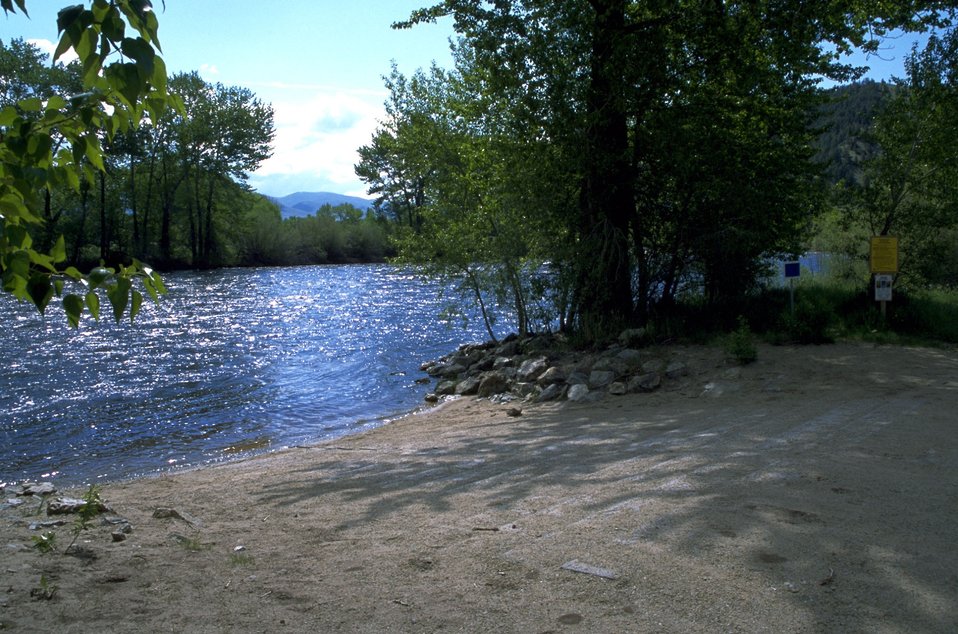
Boat ramp at Divide Day Use Area